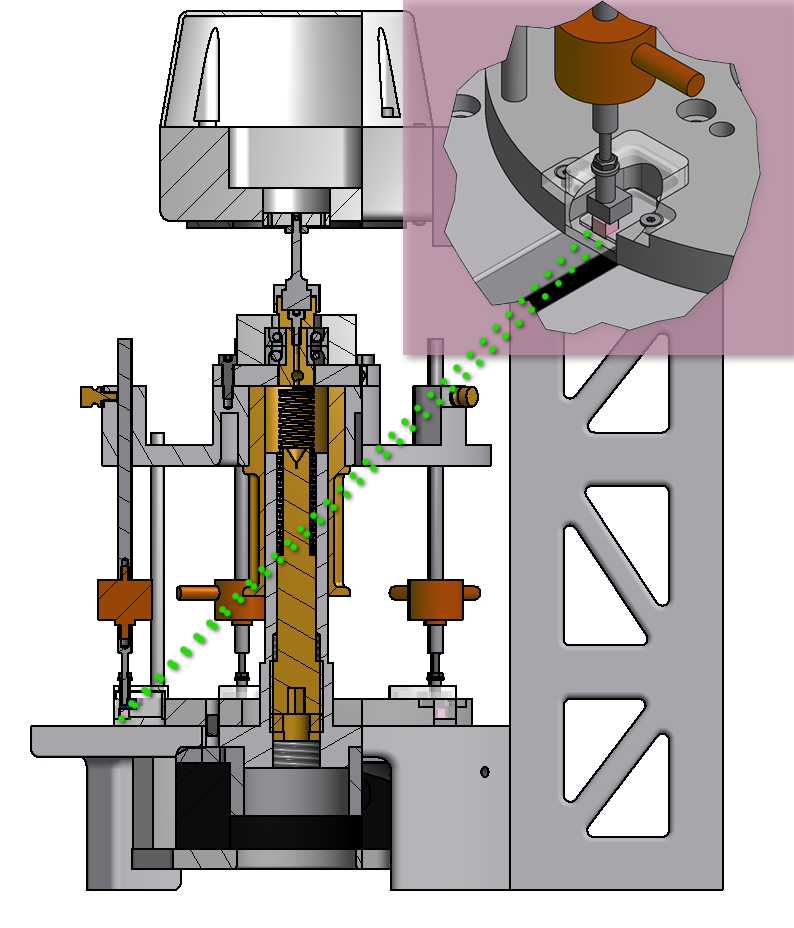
Bioreactor Schema

Drawing of NISTs prototype bioreactor for tissue engineering. The bioreactor both stimulates and evaluates engineered tissue as it grows. Samples consisting of a mixture of cartilage cells and water-based gels (pink in the drawing) are placed in wells, and force is applied to the sample from above to mimic natural stimuli. Ultrasound techniques monitor tissue changes over time.